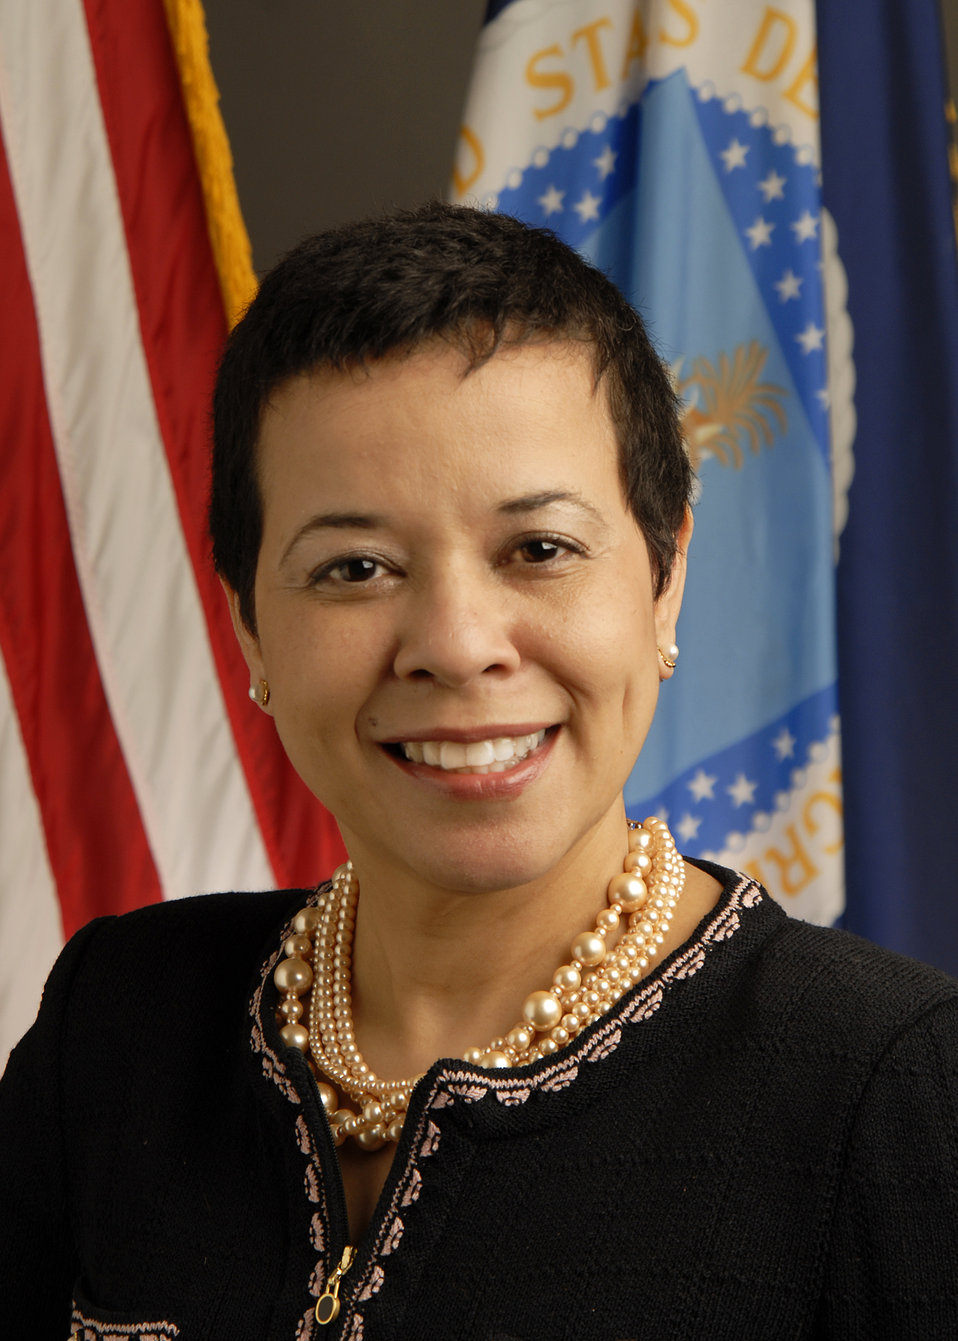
20110504-OGC-KJH-0654 General Council, U.S. Department of Agriculture, Romona Romero

Romona Romero, General Council, United States Department of Agriculture.